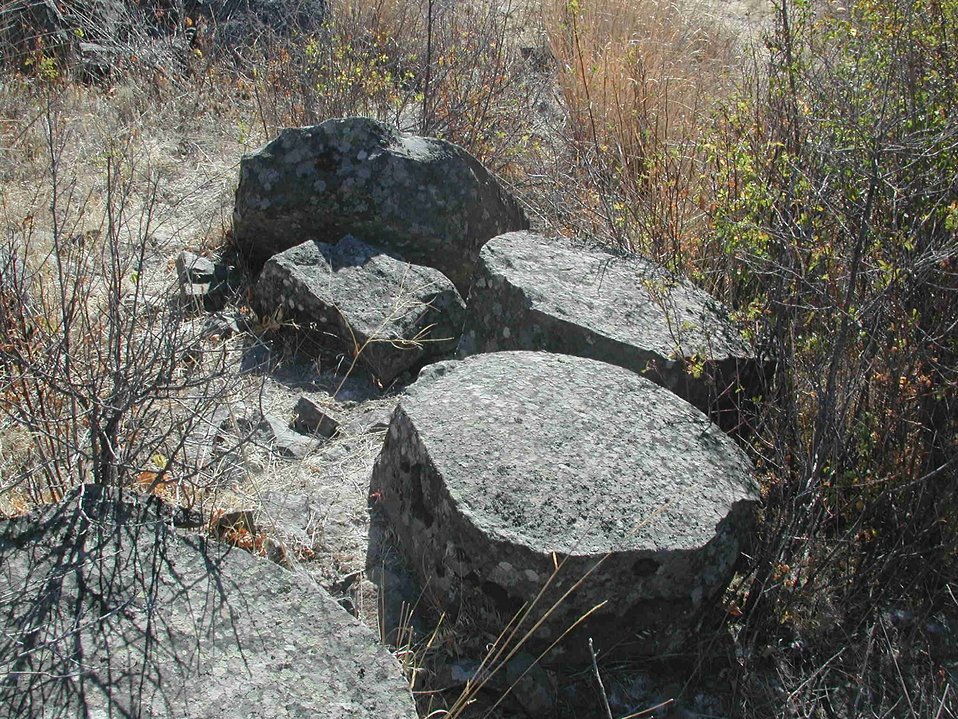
View of typical hexagonal cooling fracture pattern of the columnar basalt.